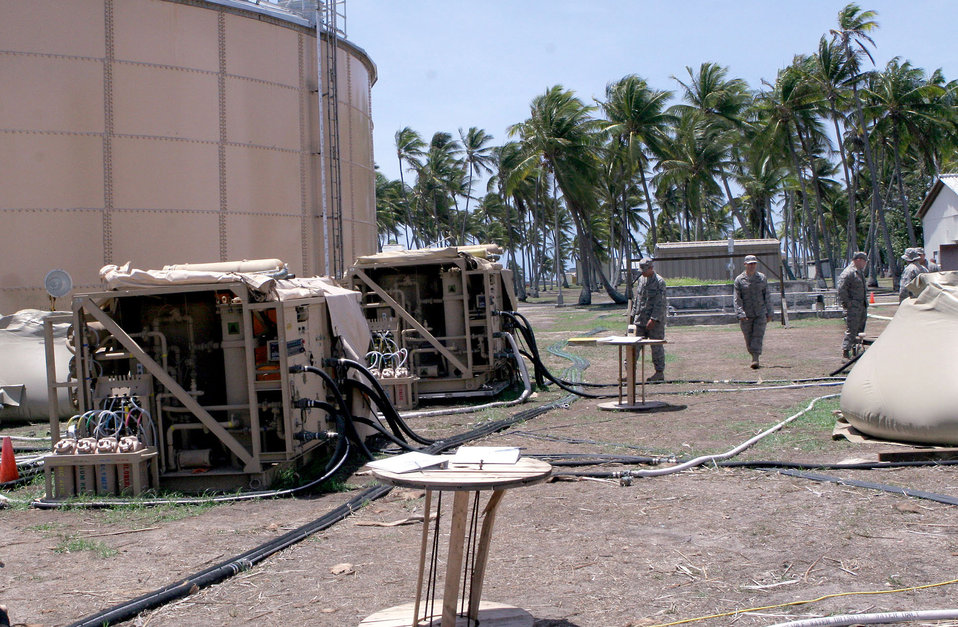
Airmen deliver clean water to island community

Airmen monitor reverse osmosis machines used for removing particles, sediment and salt from water March 27 at Roi-Namur, an island in the Kwajalein Atoll. The team is deployed to the island to provide clean drinking water to the island's residents.